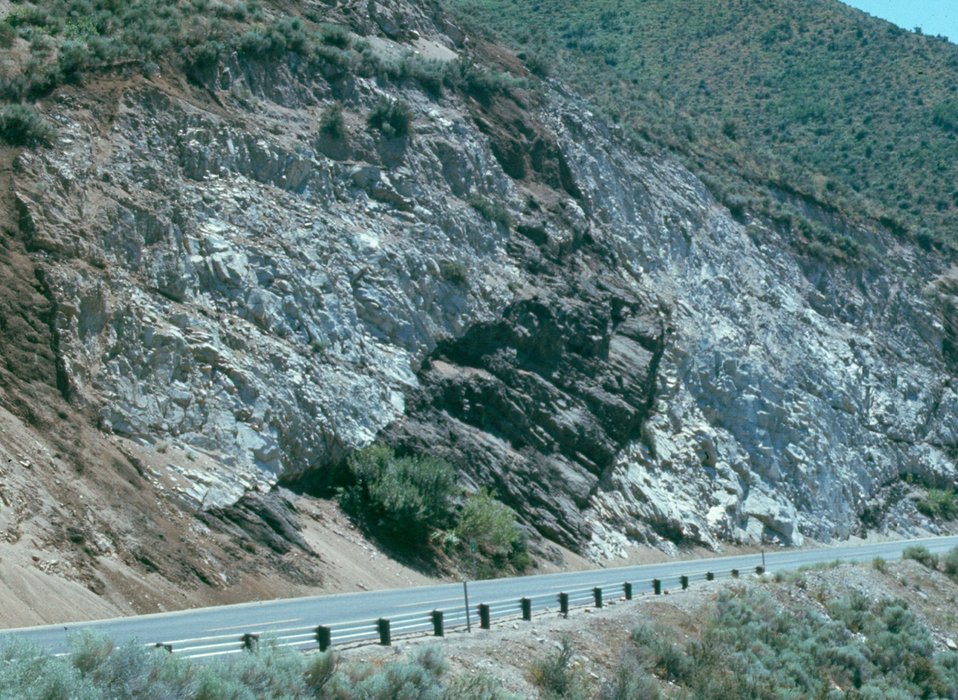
Basalt dike on way to Idaho City Four Rivers LSRD Lower Snake River District